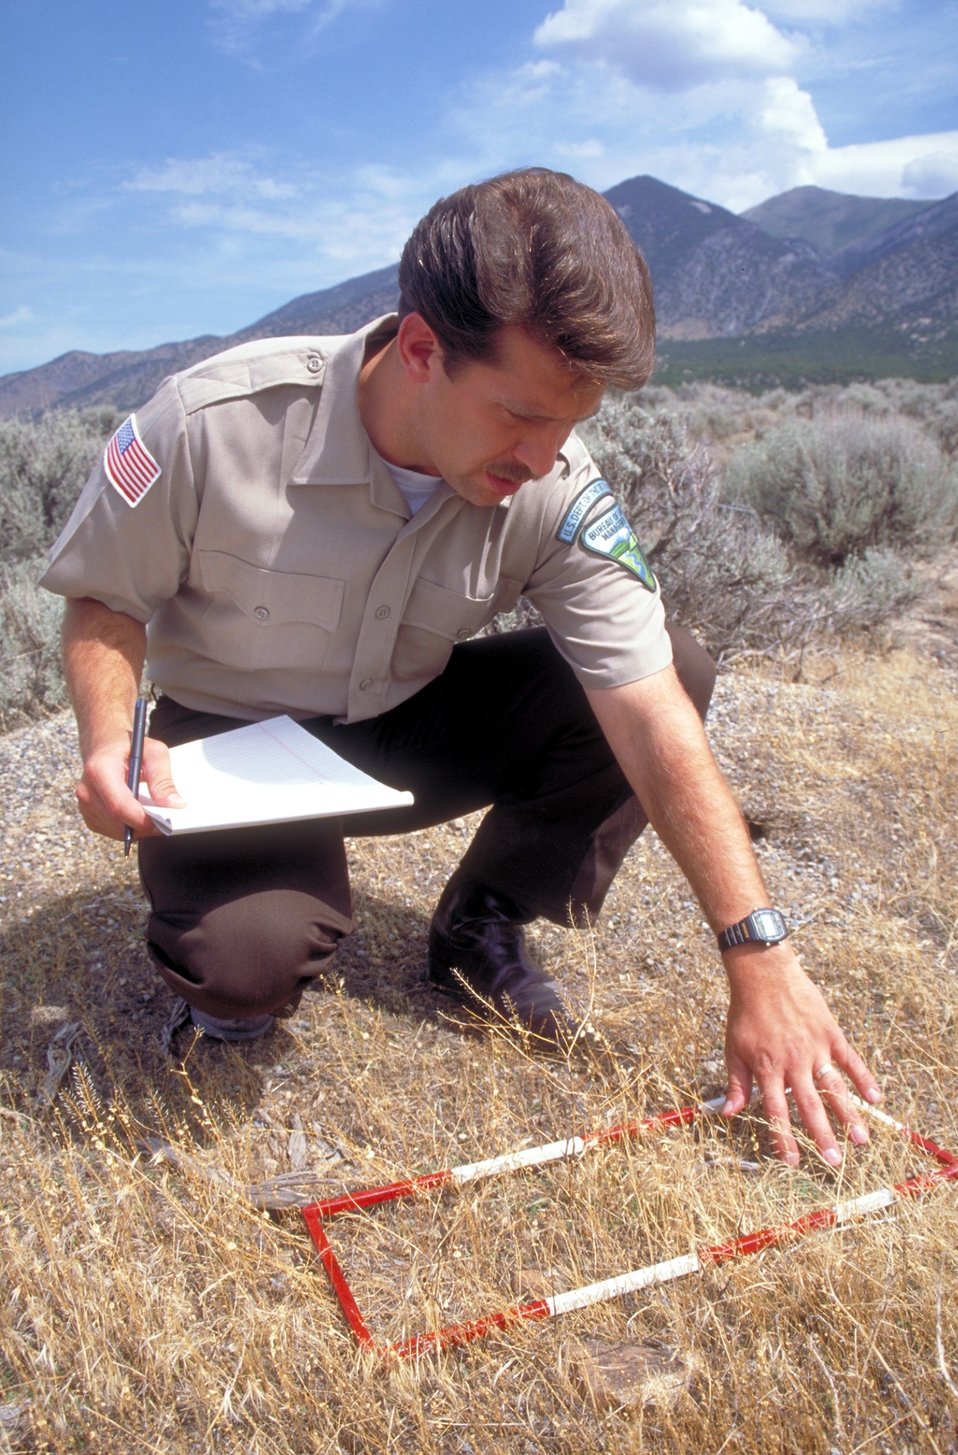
Range study in the West Desert of Utah.